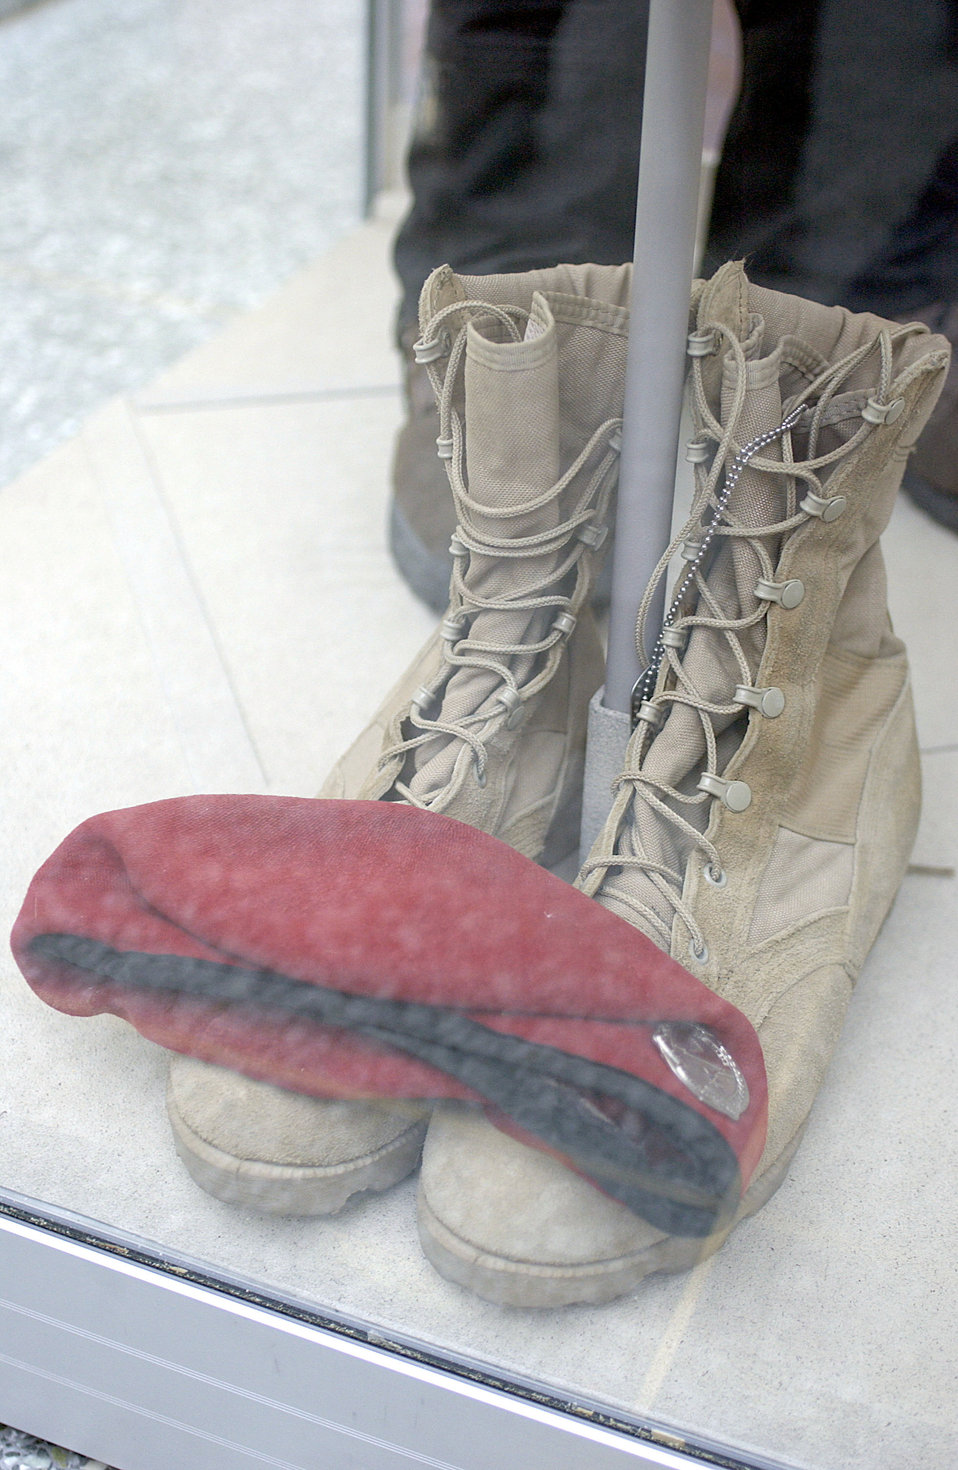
Unveiling ceremony

WASHINGTON -- Air Force Secretary Dr. James G. Roche unveiled a memorial at Arlington National Cemetery on Jan.8 to honor Tech. Sgt. John A. Chapman who was killed March 4, 2002, while fighting against the Taliban during Operation Anaconda in Afghanistan. He was posthumously decorated with the nation's second-highest award for valor, the Air Force Cross.